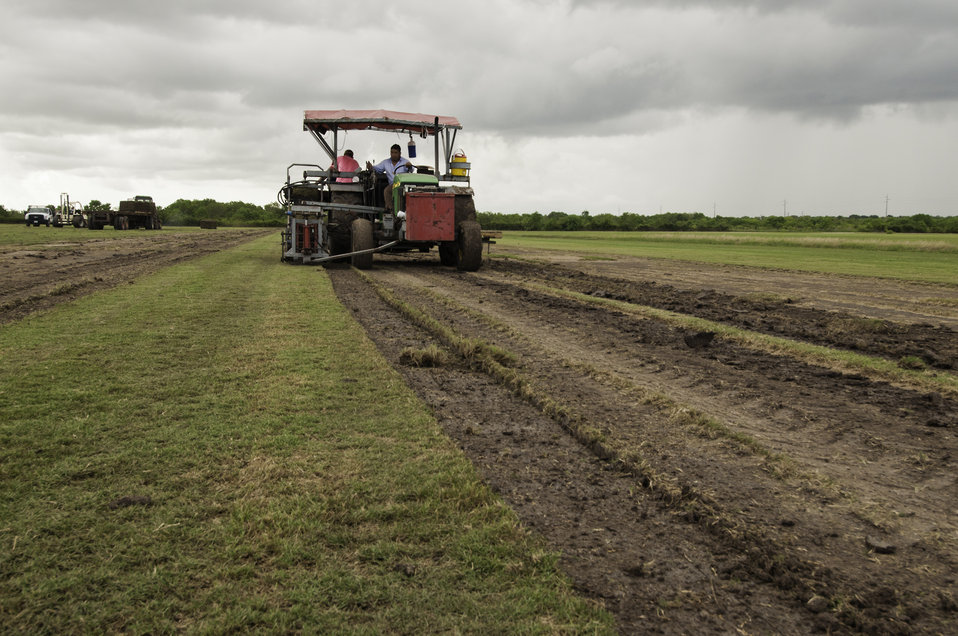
Sod used in landscaping is harvested on the Quality Turf Farms in Guy, TX on Aug. 23, 2013.